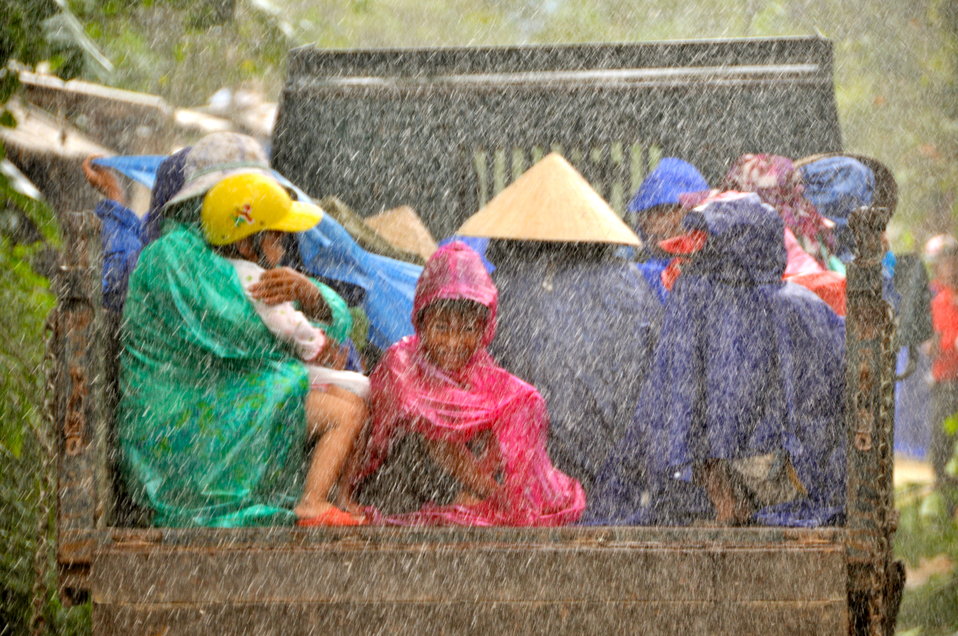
USAID and Save the Children support community evacuation drill and emergency preparedness in central Vietnam

Loc An Commune, Phu Loc District, Thua Thien Hue Province
December 4, 2012, Photo: Richard Nyberg, @USAIDVietnam